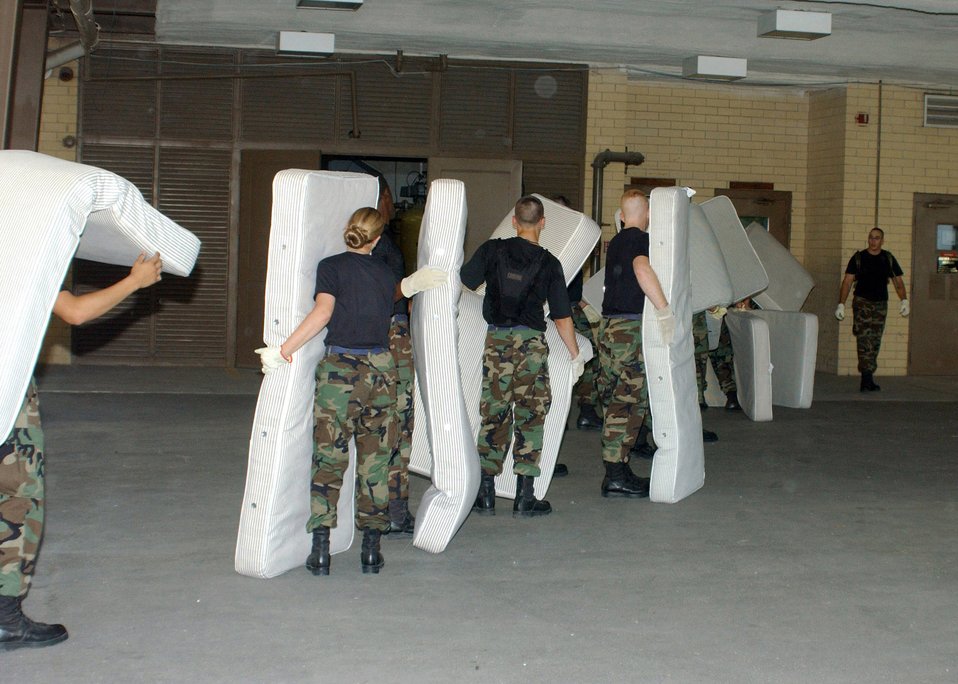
Lackland Airmen take care of Rita evacuees

LACKLAND AIR FORCE BASE, Texas -- Airmen prepare an empty recruit house here for evacuees of Hurricane Rita.